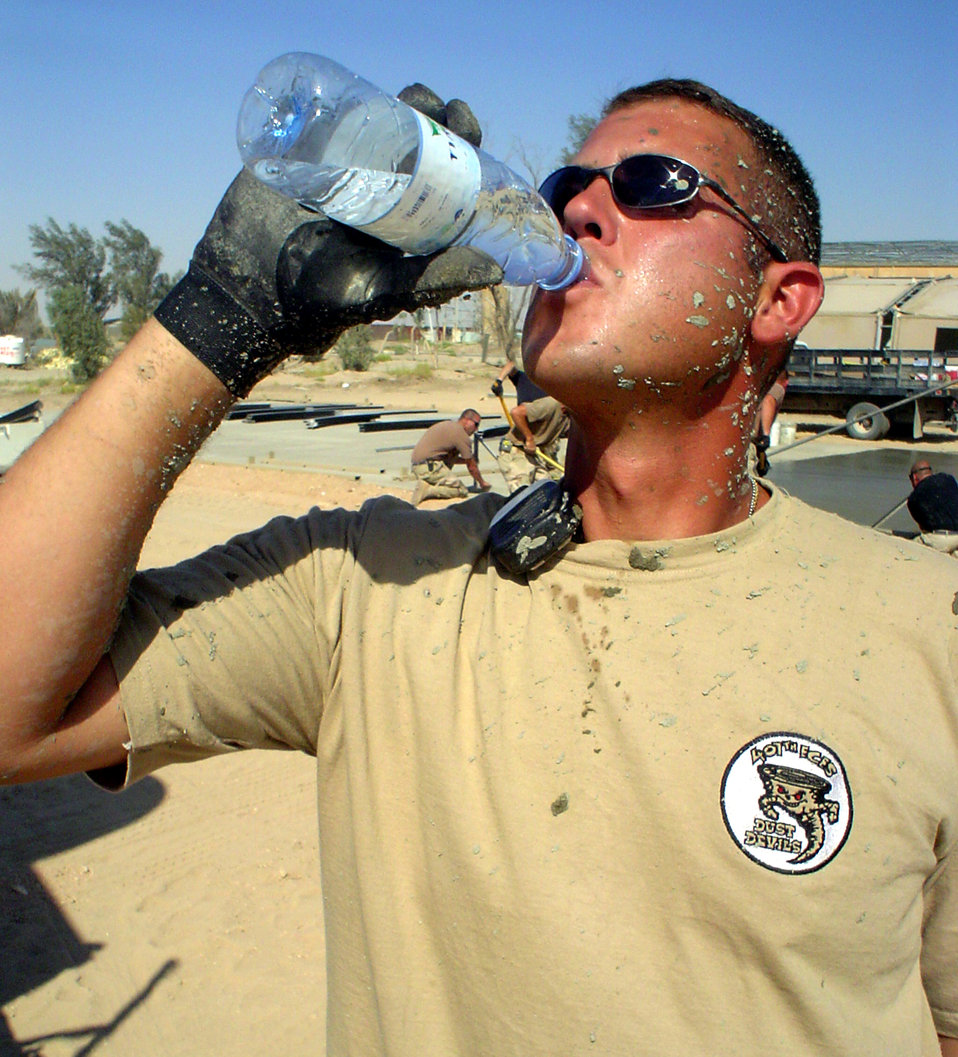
In the heat of the moment

TALLIL AIR BASE, Iraq -- Staff Sgt. Travis Webb takes a water break while laying concrete as temperatures top the 107-degree mark here June 17. Sergeant Webb is assigned to the 407th Expeditionary Civil Engineer Squadron here and is deployed from Misawa Air Base, Japan.